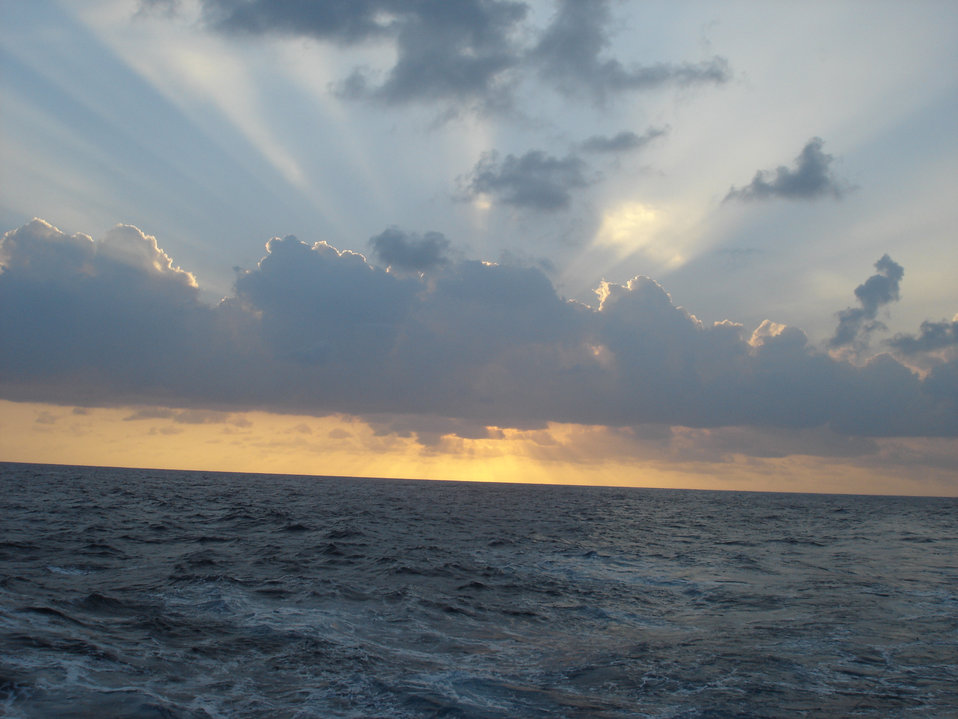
Shadow bands and light bands during a tropical sunset